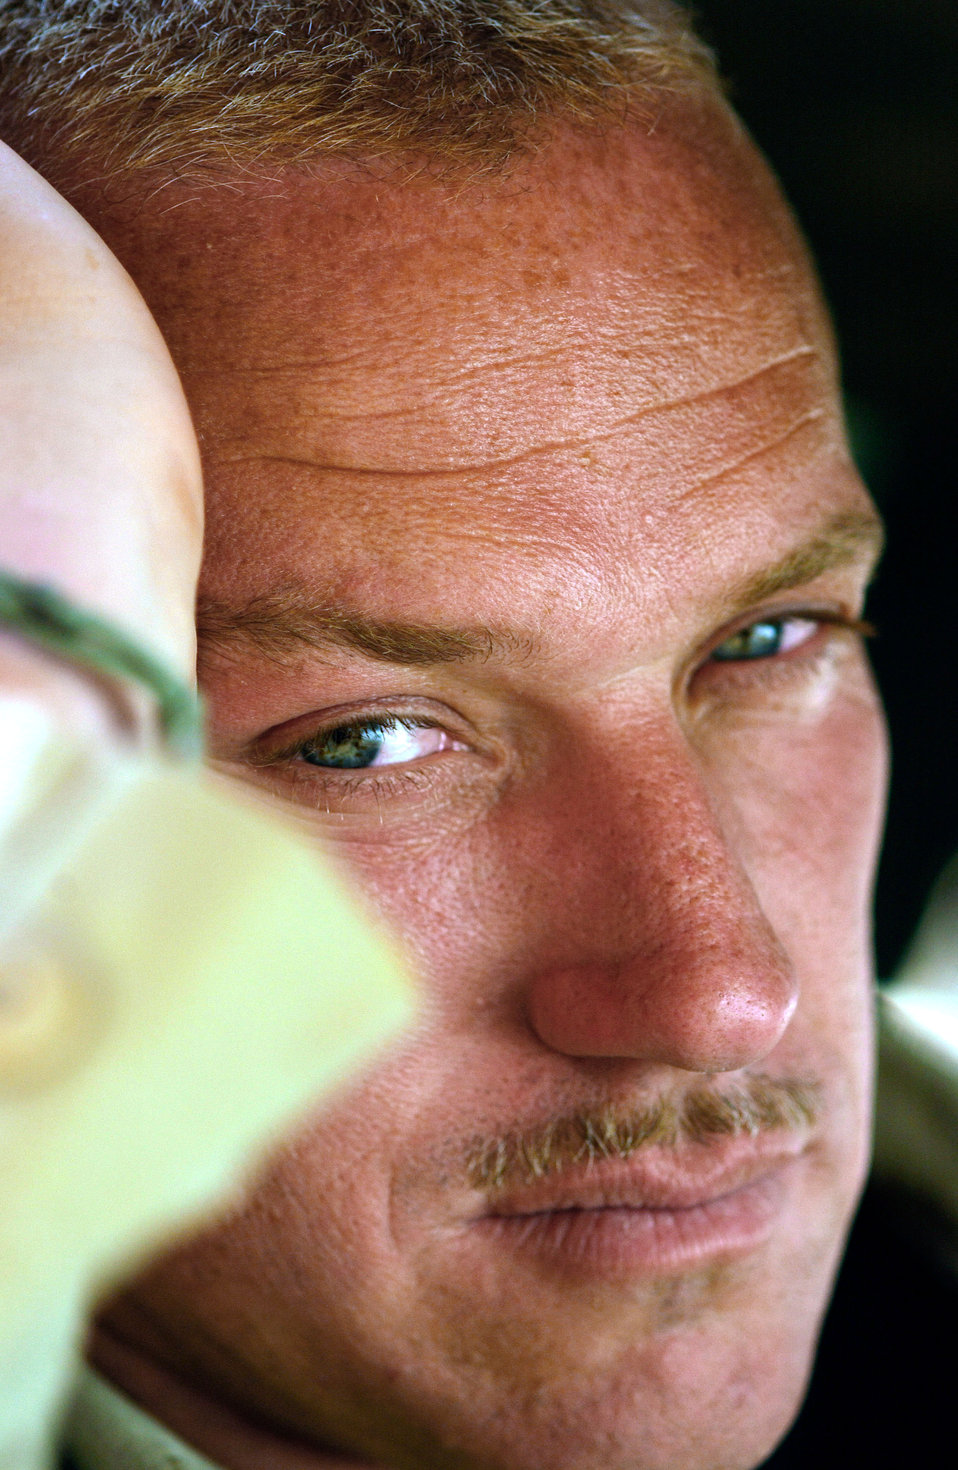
Brown

OPERATION IRAQI FREEDOM -- Tech. Sgt. Frank Brown, a security forces craftsman deployed from the 12th Security Forces Squadron, Randolph Air Force Base, Texas to the 363rd Expeditionary Security Forces Squadron, takes break from the heat while performing a perimeter fence line security on April 4, 2003.